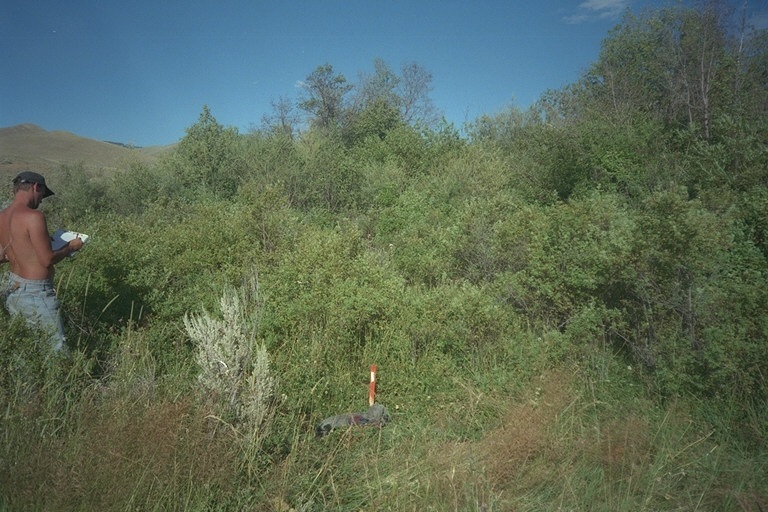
Riparian area Public Lands Salmon Field Office UCSC Upper Columbia Salmon Clearwater District